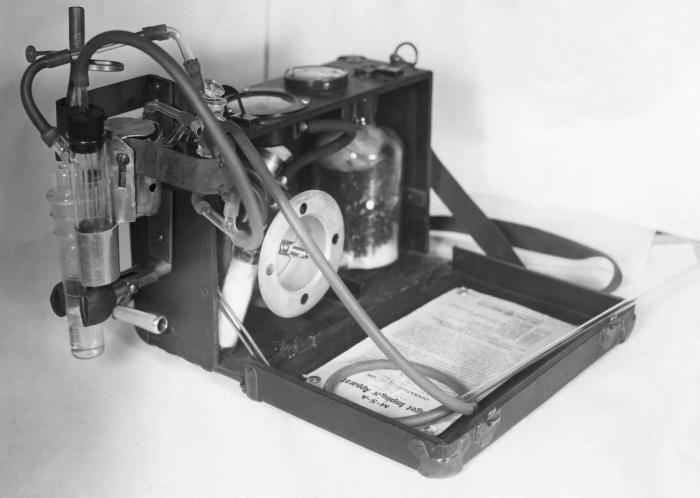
This 1948 historical photograph was provided by the Center for Disease Control's (CDC), National Institute for Occupational Safety and Health (NIOSH). Reprinted from the January, 1949, 'Industrial Hygiene Newsletter', it depicted a Mine Safety Appliances Company (MSA), Midget Impinger� apparatus, that was used to collect halogenated hydrocarbons (HHC). HHCs are a cardiovascular, or blood toxicant. In the 1940s and 1950s, the Industrial Hygiene Division (IHD) investigated hazards associated with many types of manufacturing activities. This design was an example of a measure meant to improve workplace safety by keeping vapors from escaping.